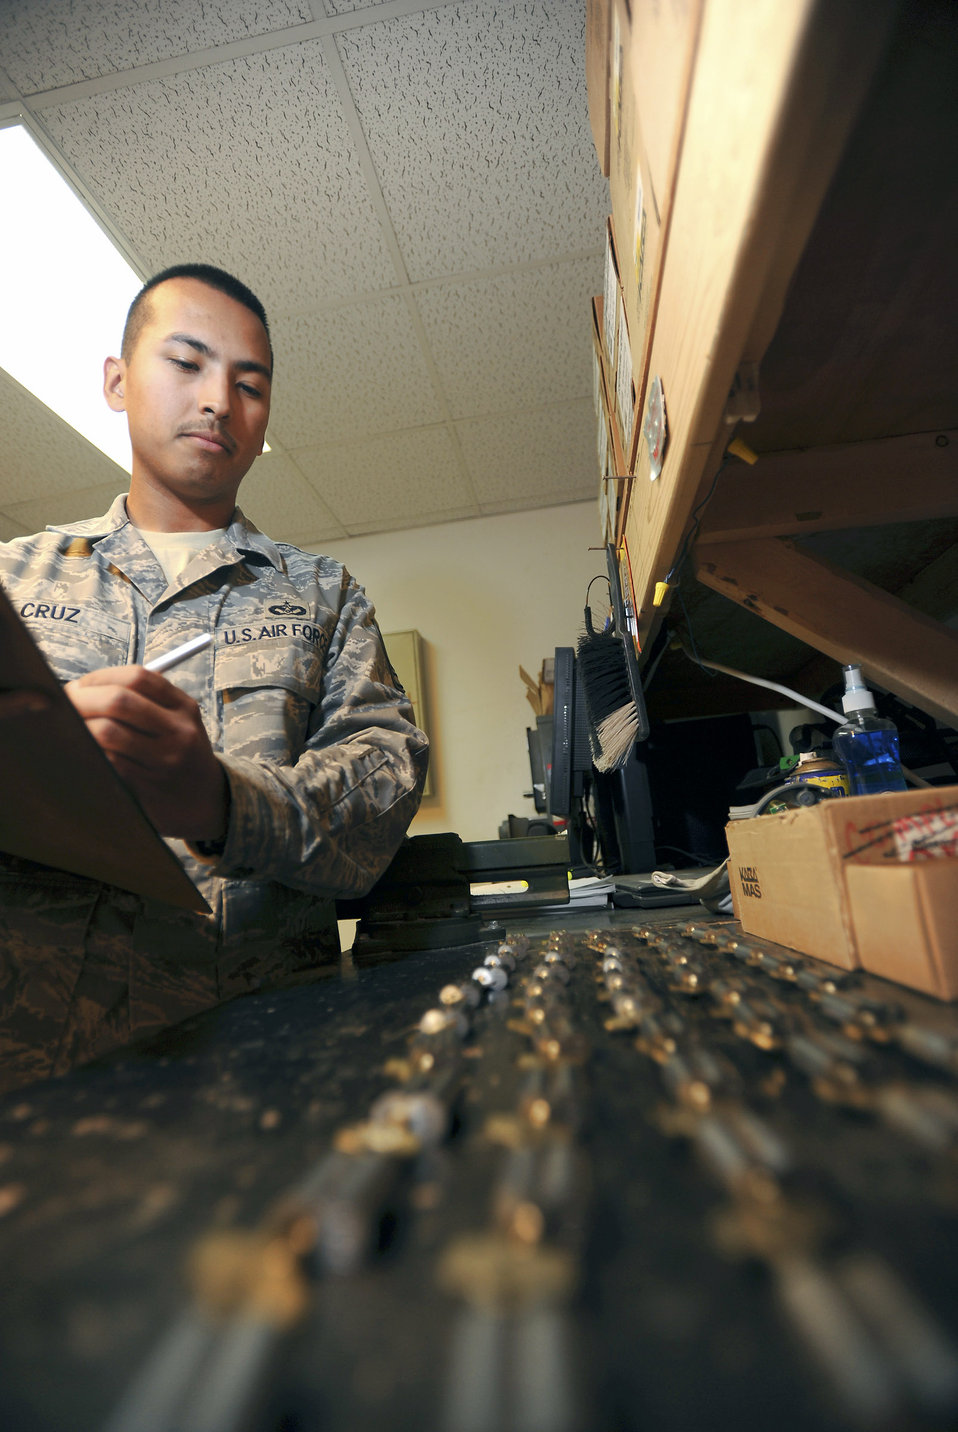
The key masters

Staff Sgt. Matthew Cruz inventories keys and their corresponding locks before heading out for a job Feb. 25 at an air base in Southwest Asia. The locks will be installed in a brand new facility opening on base in the near future. Sergeant Cruz is a locksmith with the 379th Expeditionary Civil Engineer Squadron, and is deployed from Pope Air Force Base, N.C. He is a native of Tacoma, Wash.